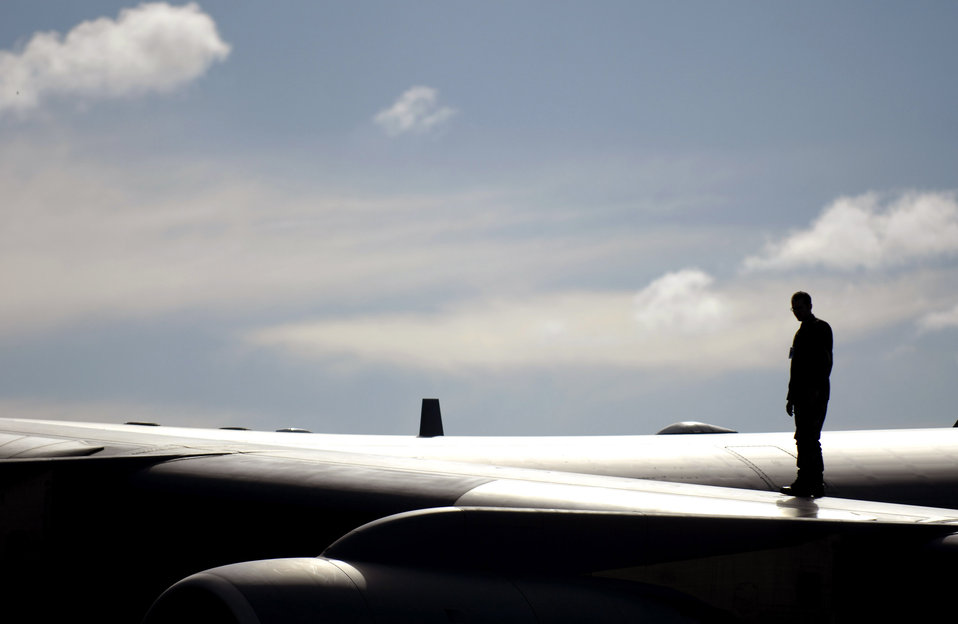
Getting ready to fly to McMurdo

A maintainer conducts a walk-around inspection on his C-17 Globemaster III prior to the upcoming winter fly-in missions to Antarctica at Christchurch, New Zealand, Aug. 19. The C-17 and 31 Airmen from McChord Air Force Base, Wash., will begin the annual winter fly-in augmentation of scientists, support personnel, food and equipment for the U.S. Antarctic Program at McMurdo Station Aug. 20. WinFly is the opening of the first flights to McMurdo station, which closed for the austral winter in February.